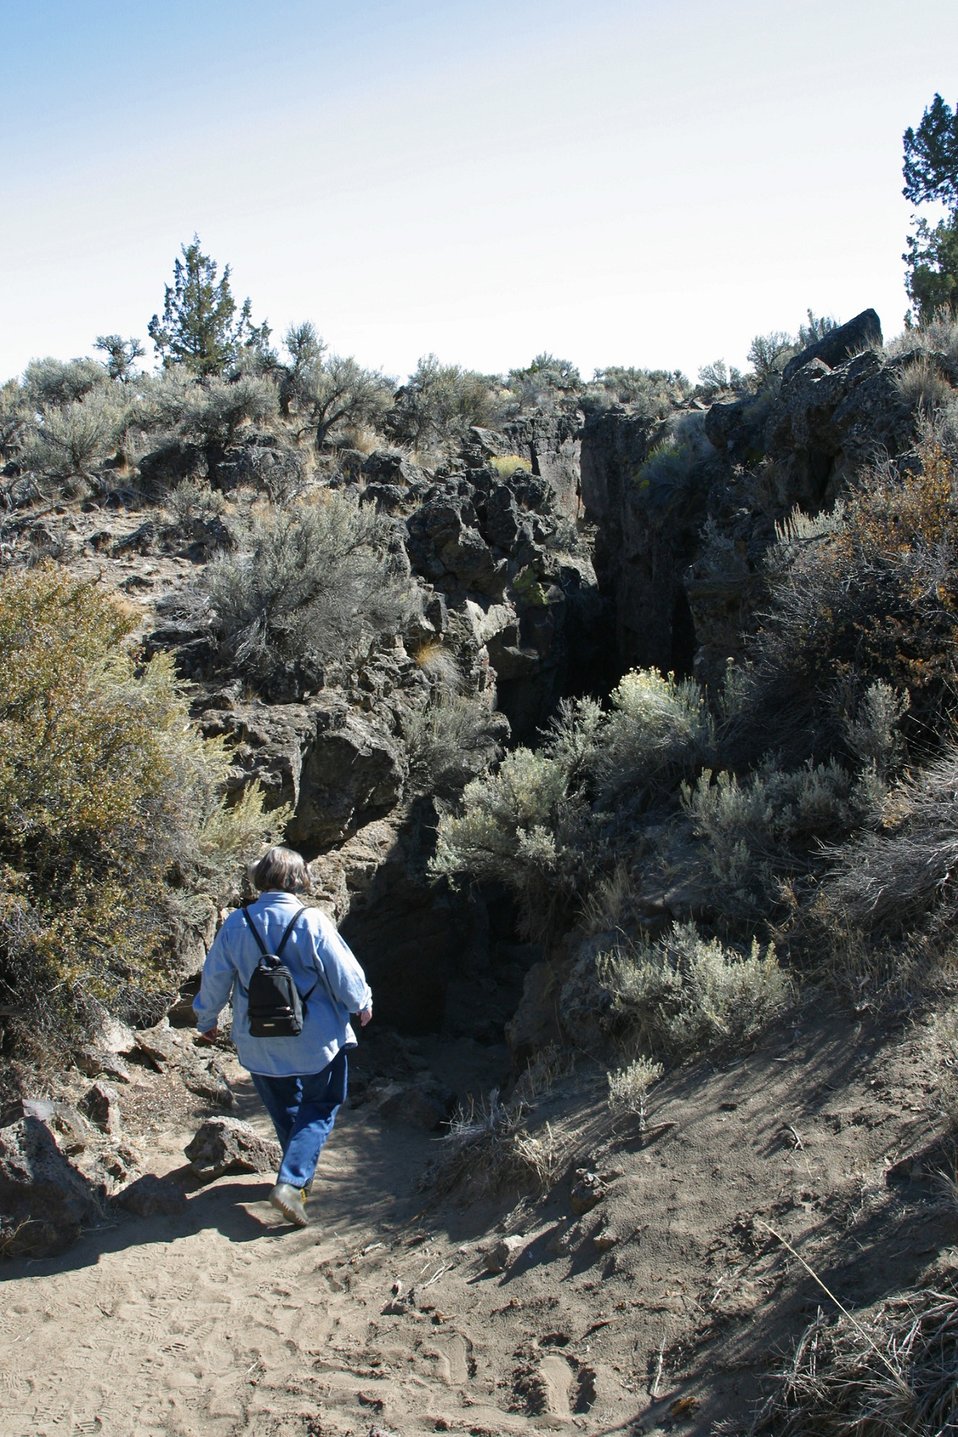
Entrance to Crack-in-the-Ground on the Lakeview District.